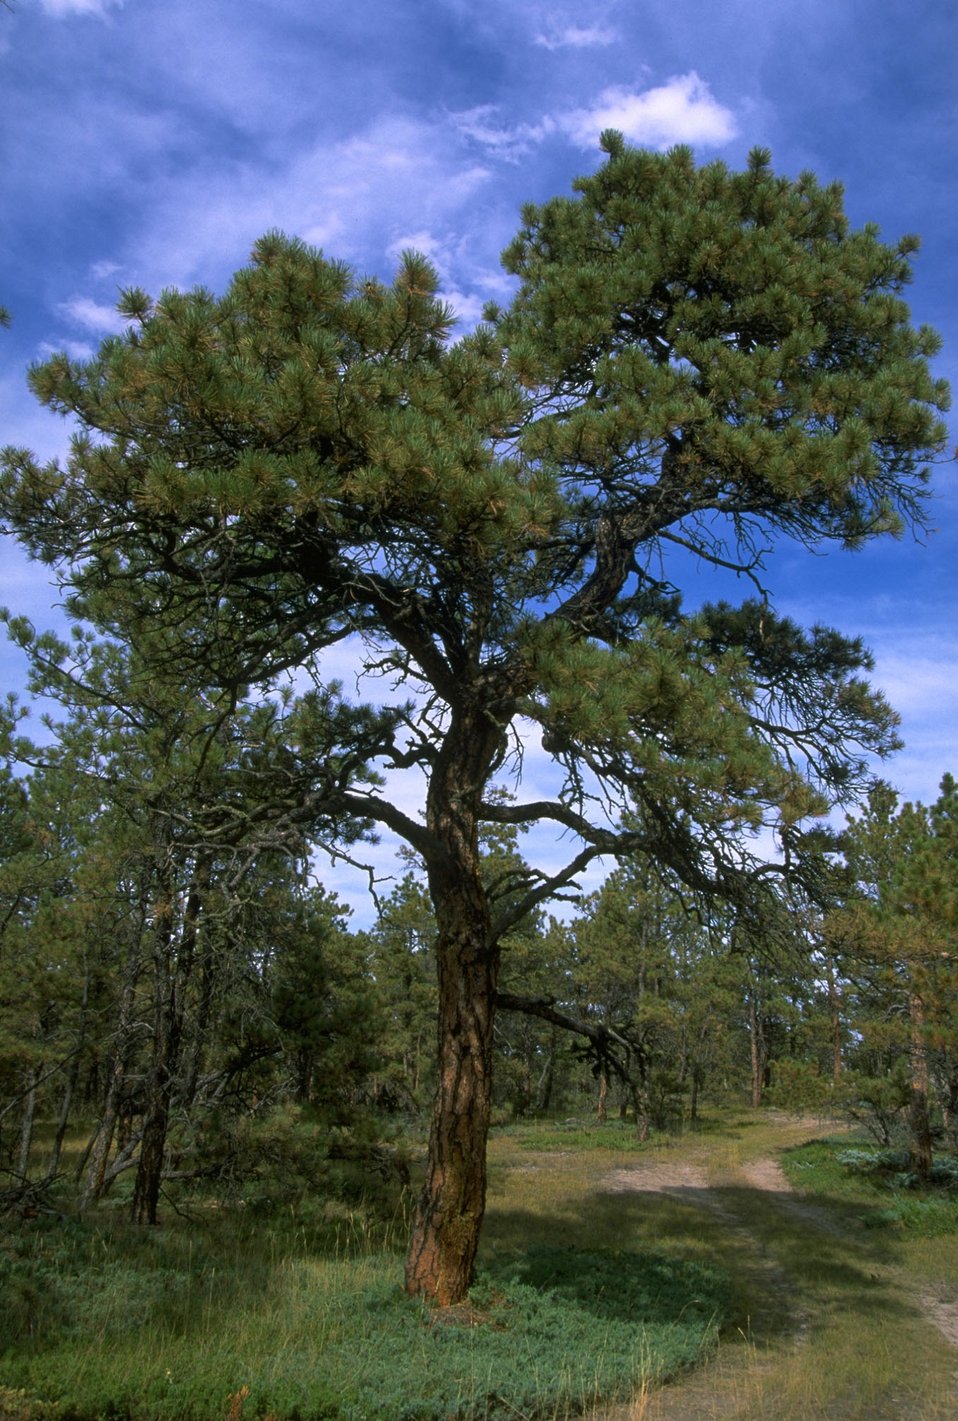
Acid Shale Area of Critical Environmental Concern (ACEC)